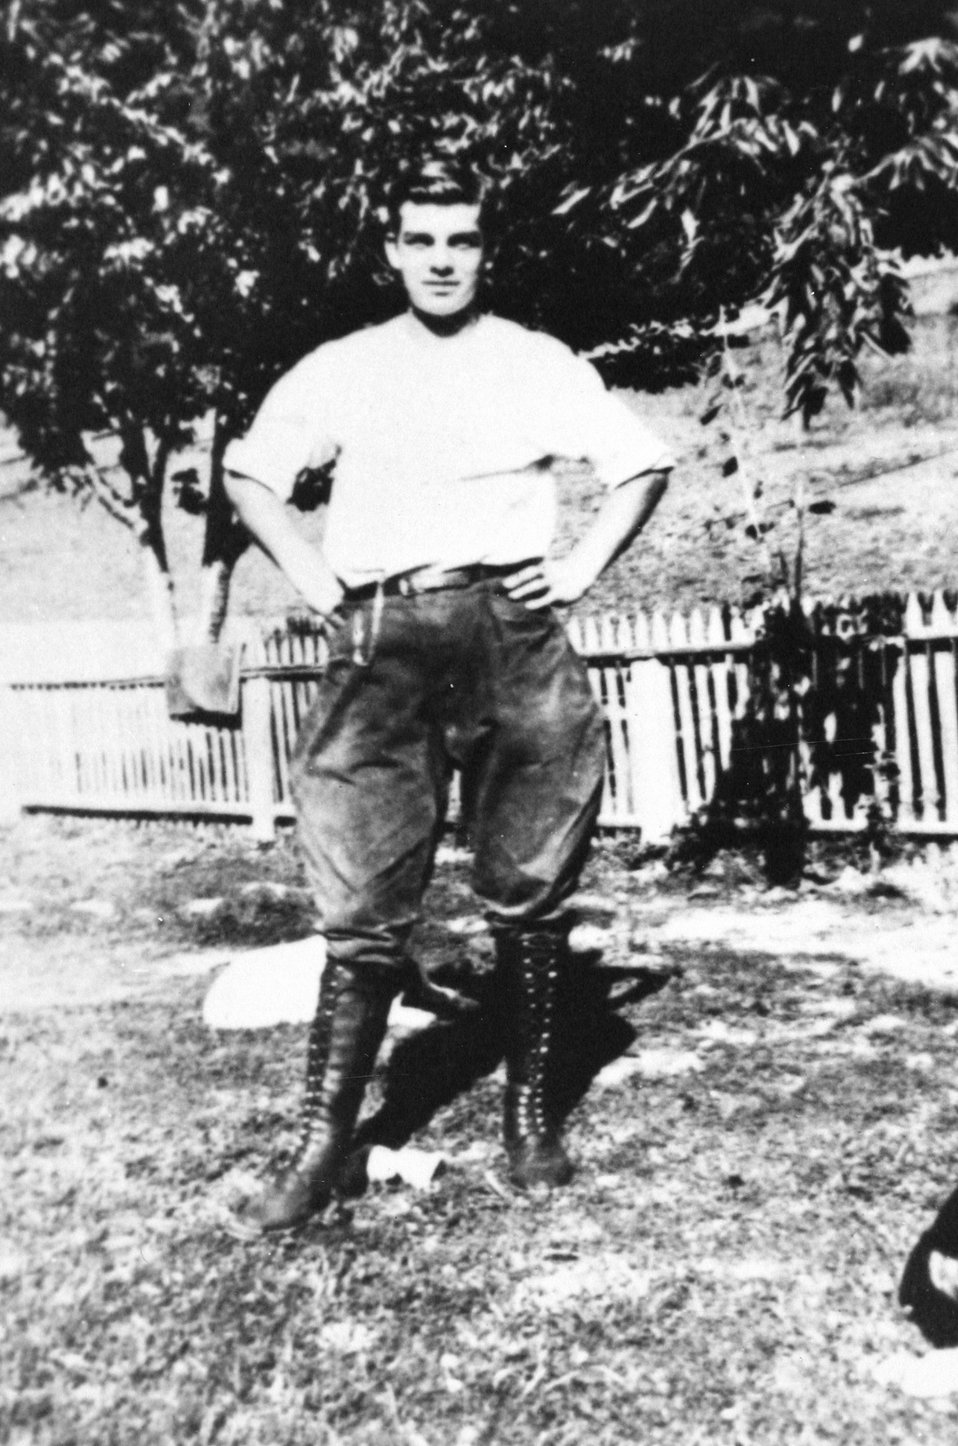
Ivin Billings